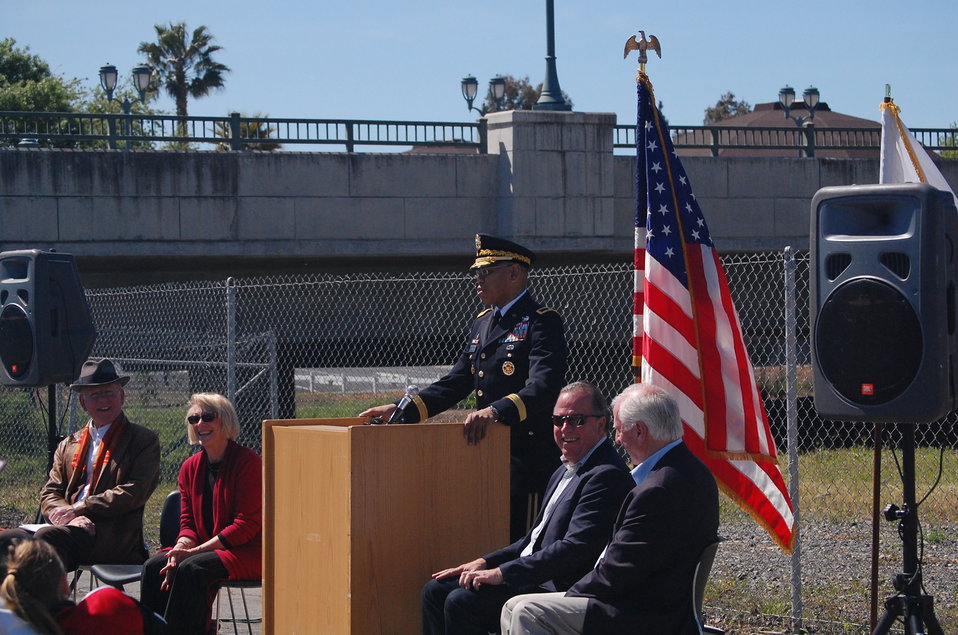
Corps joins Rep. Mike Thompson, Napa officials to break ground on new dry bypass

Brigadier Gen. David Turner, commander for the U.S. Army Corps of Engineers South Pacific Division, speaks during a ground breaking ceremony April 5, 2014, to kick off construction on a new dry bypass in Napa, Calif. General Turner’s remarks emphasized the value that the bypass, as well as already completed flood risk reduction components, will provide to the residents and businesses of Napa. The Corps has been working on a series of flood risk reduction projects in downtown Napa since 2001, and previously constructed features have already prevented significant storms from flooding into downtown.